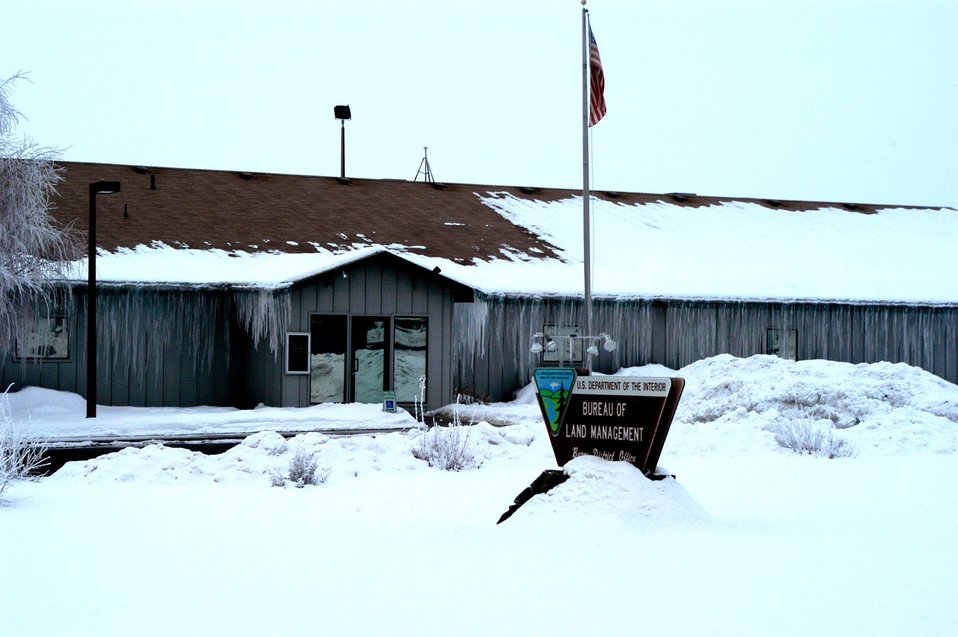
Burns District Office in Hines, Oregon January 22, 2004. Depicts snow accumulations with alternating thawing and freezing temperatures that created icicles over a two week period.